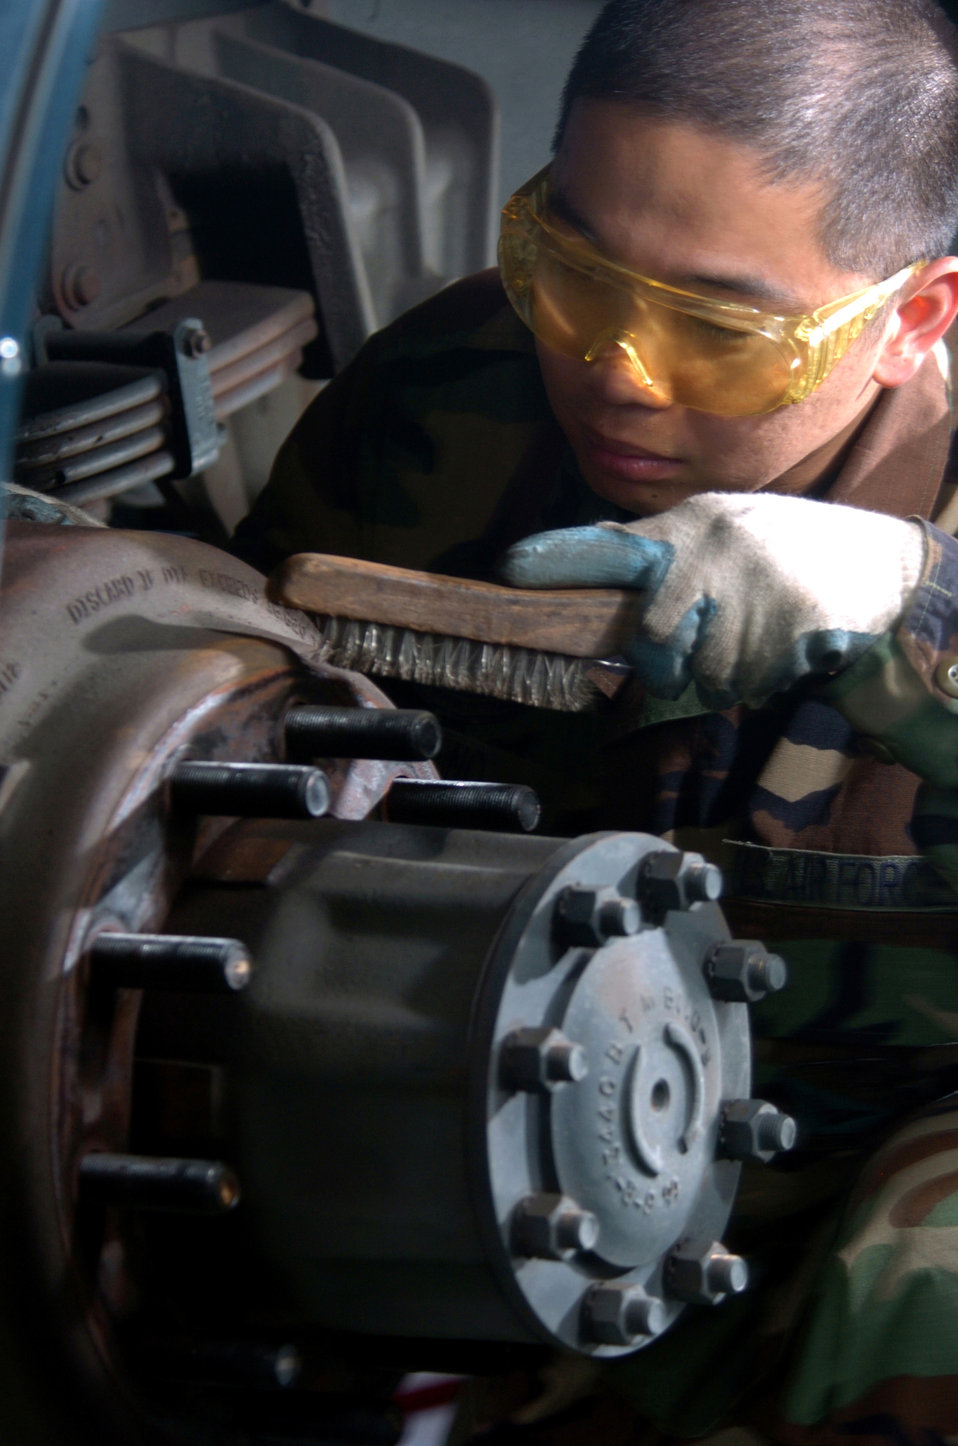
Wheelin’ and dealin’

YOKOTA AIR BASE, Japan (AFPN) -- Staff Sgt. Mike Aquino uses a steel brush to clean the threads on a bus wheel assembly here. Sergeant Aquino is a mechanic with the 374th Logistics Readiness Squadron's vehicle maintenance element. The element replaces and rebuilds parts and components for more than 1,100 vehicles here. Some of these parts include vehicle engines, transmissions, suspensions and steering and brake systems.